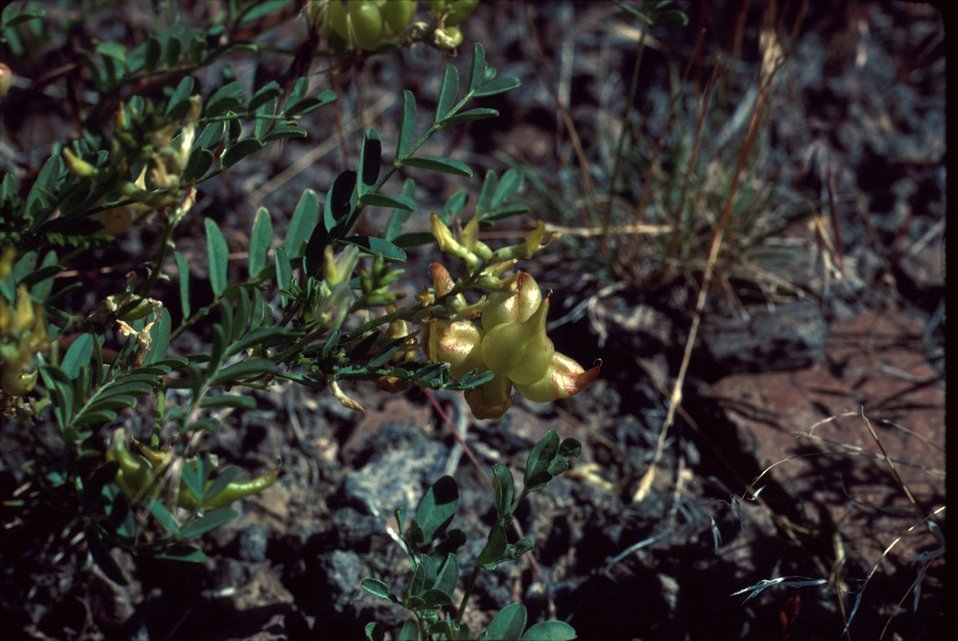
Astragalus lentiginosus Milkvetch Wildflower